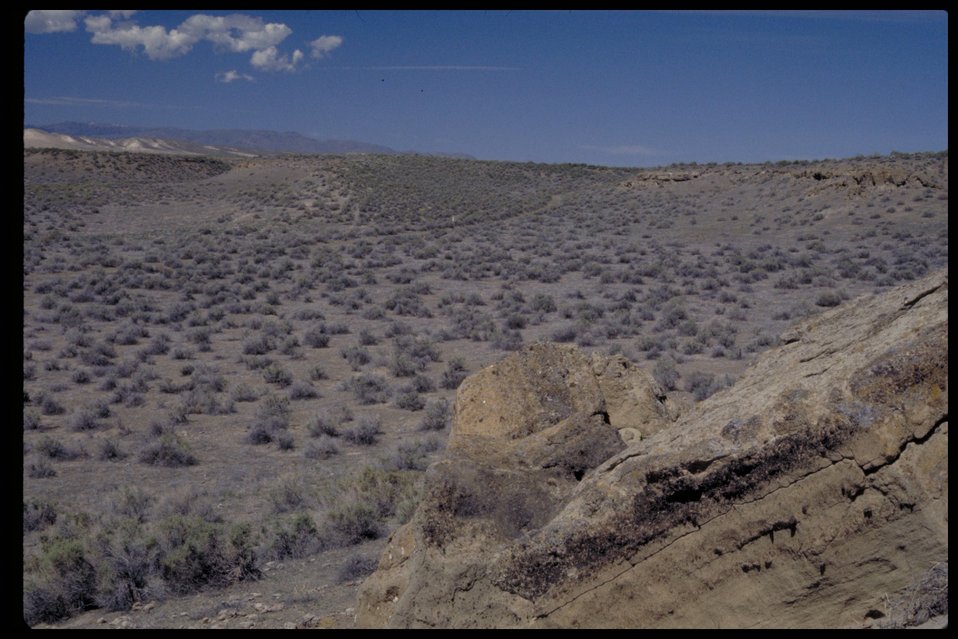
Oregon Trail near Wildhorse Butte Lower Snake River District